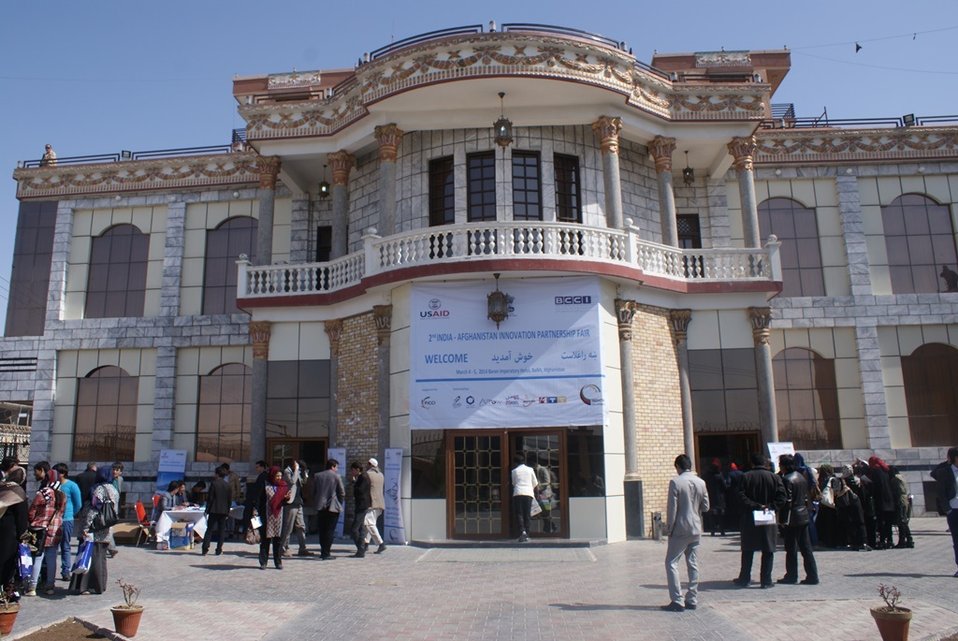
FAIDA Innovation Conference